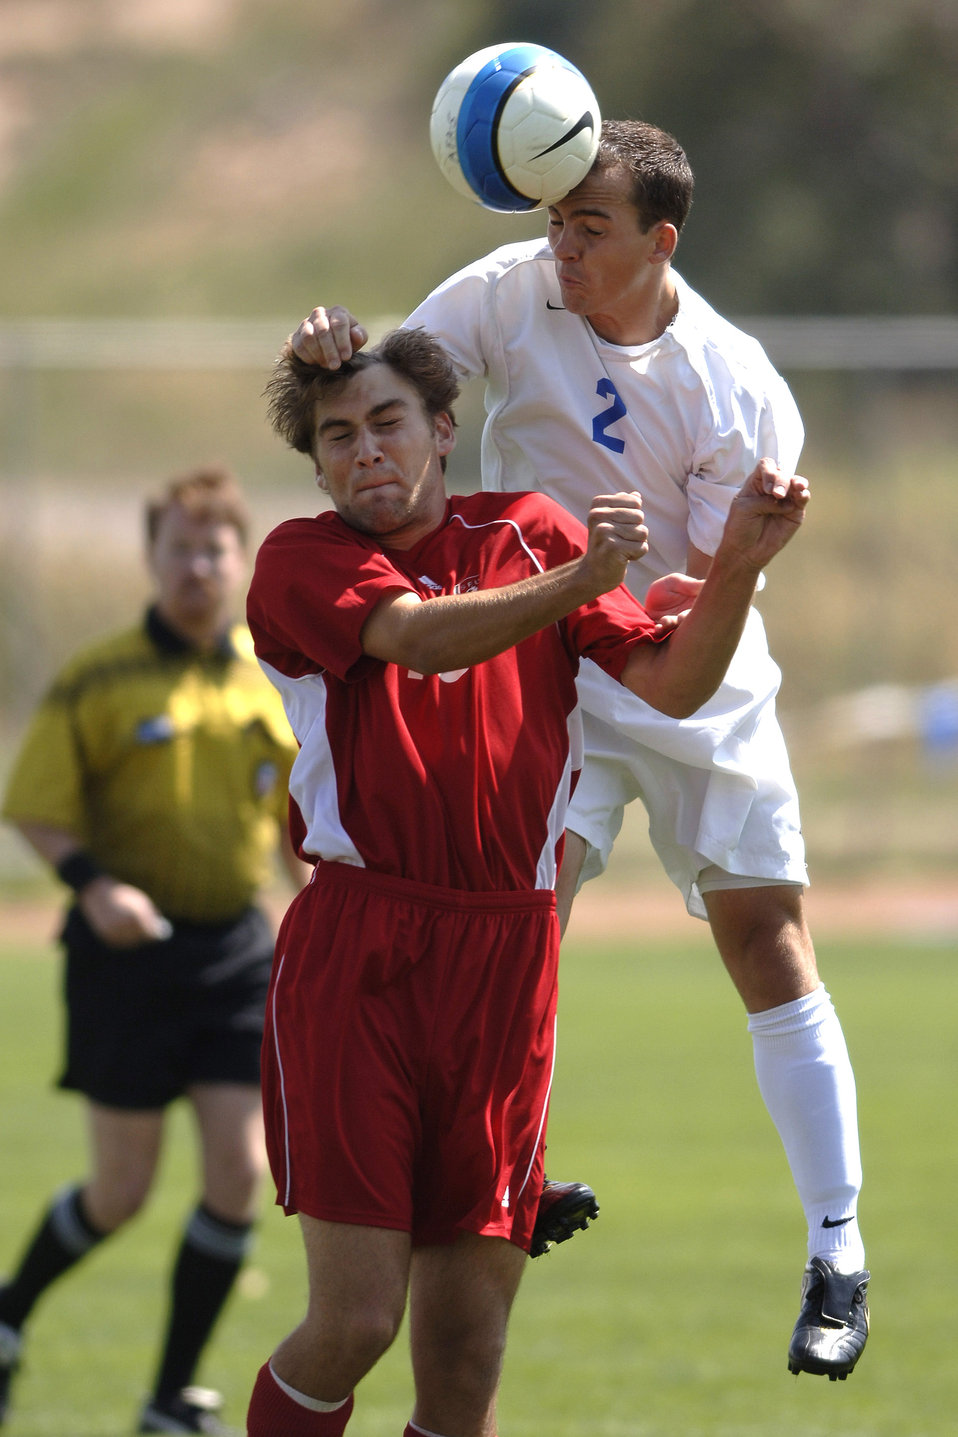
Heads up!

Air Force Academy senior Andy Nigro has the upper hand as he heads the ball during a game with St. Francis University Sept. 9 at the Academy in Colorado Springs, Colo. The Falcons posted a 1-0 victory.